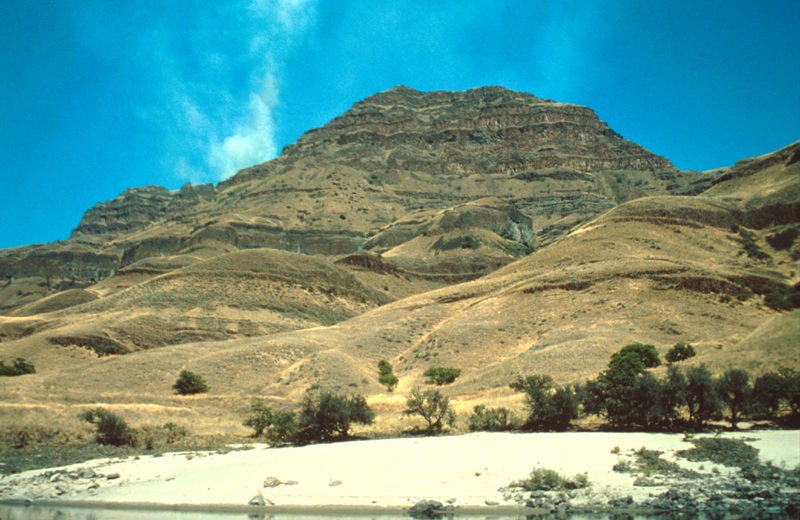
Lower Salmon River Cottonwood Field Office UCSC Upper Columbia Salmon Clearwater District